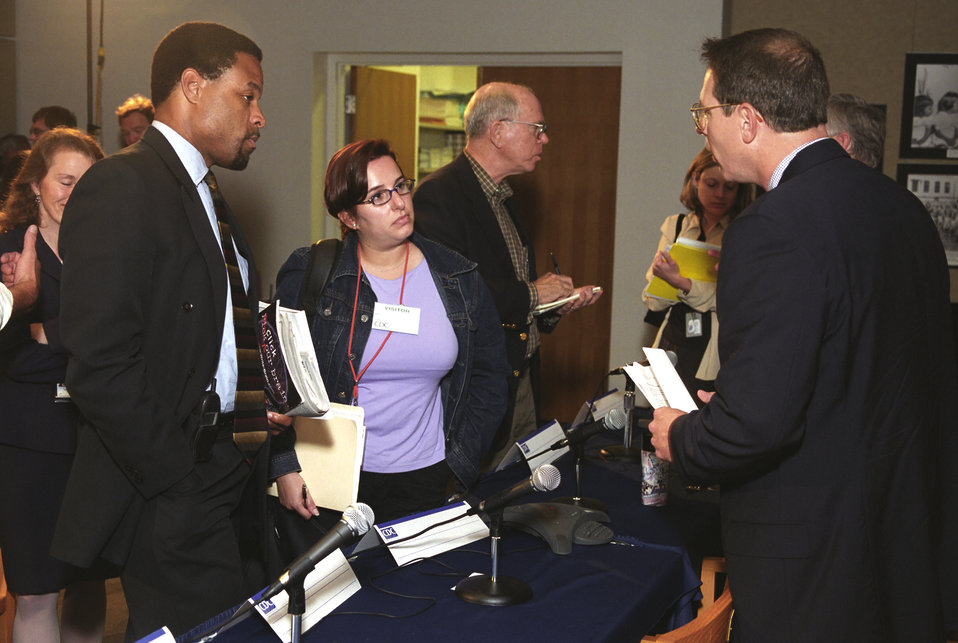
Centers for Disease Control and Prevention Bioterrorism Preparedness Press Briefing, August 27, 2002.